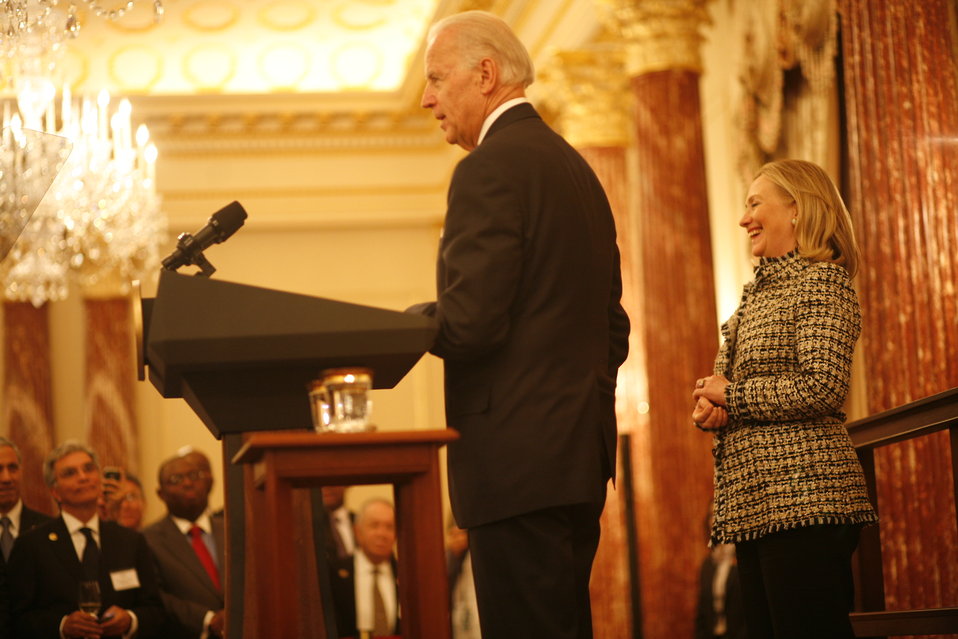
Vice President Biden Delivers Remarks

U.S. Vice President Joseph Biden delivers remarks, as U.S. Secretary of State Hillary Rodham Clinton looks on, at the first-ever State Department Global Business Conference at the U.S. Department of State in Washington, D.C., on February 21, 2012.